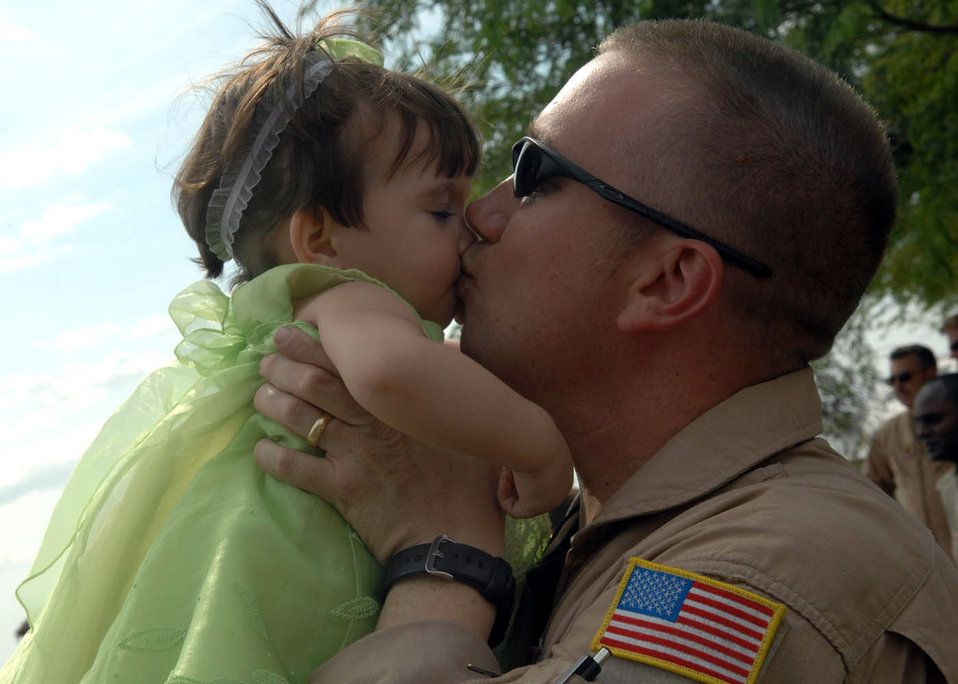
Hugs and kisses

Staff Sgt. Garry Gray kisses his 1-year-old daughter Jessica Denise as they are reunited July 9 after his return from a 120-day deployment to Balad Air Base, Iraq, at Davis-Monthan Air Force Base, Ariz. Sergeant Gray is an aerial gunner assigned to the 55th Rescue Squadron.